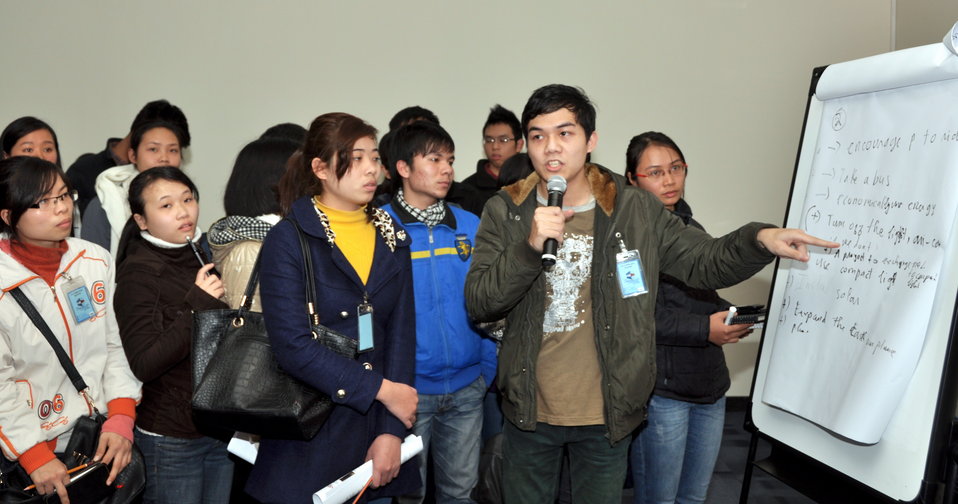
Speaker program on Climate Change and Clean Energy at the American Center

Hanoi, January 16, 2013